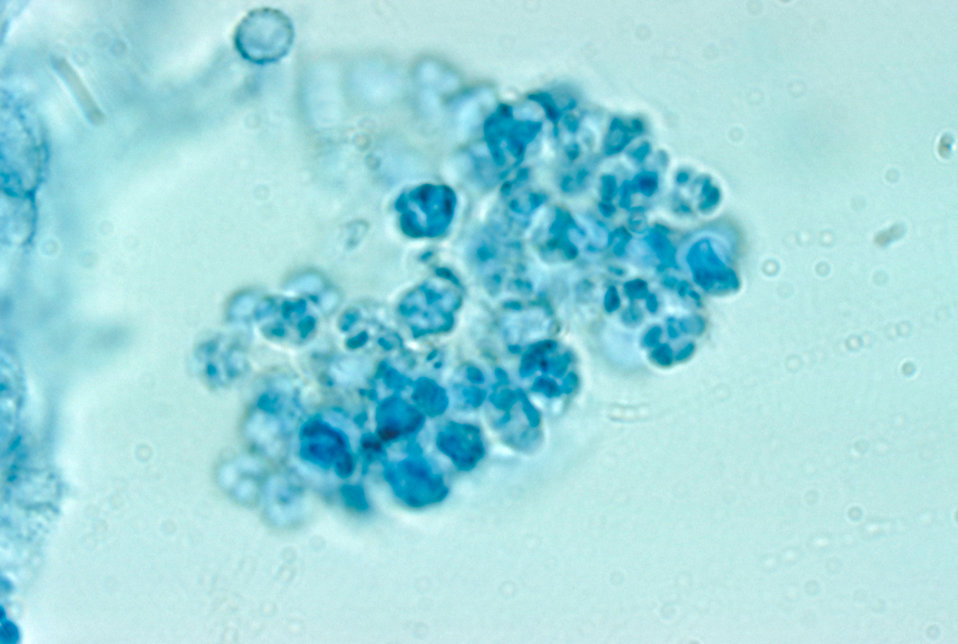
This photomicrograph shows the asci and ascospores of the fungus Arthroderma grubyi, formerly Nannizzia grubyia.